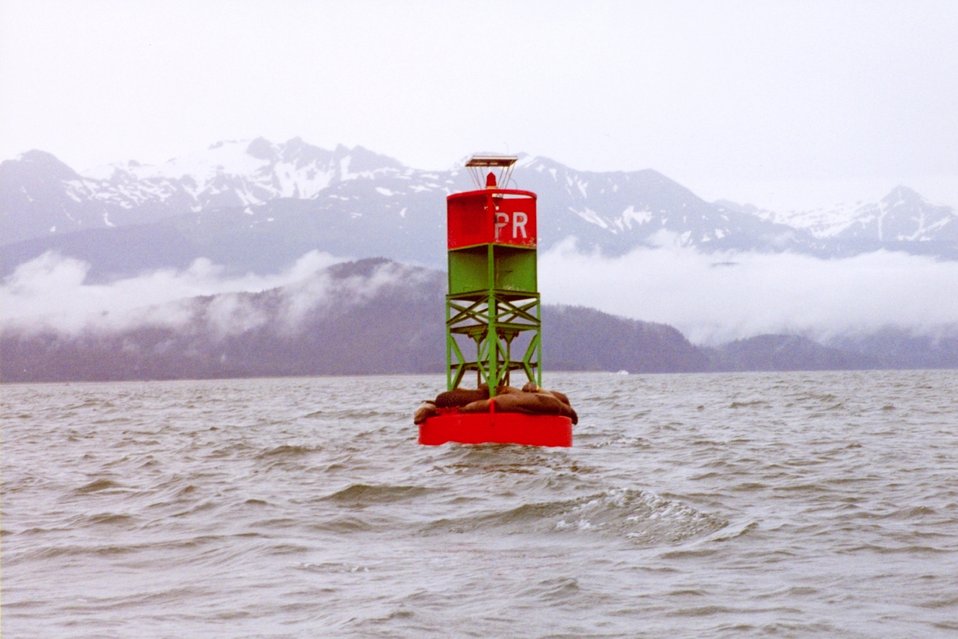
Sea lions find a resting place on a buoy in the labyrinth of Southeast Alaska waterways.